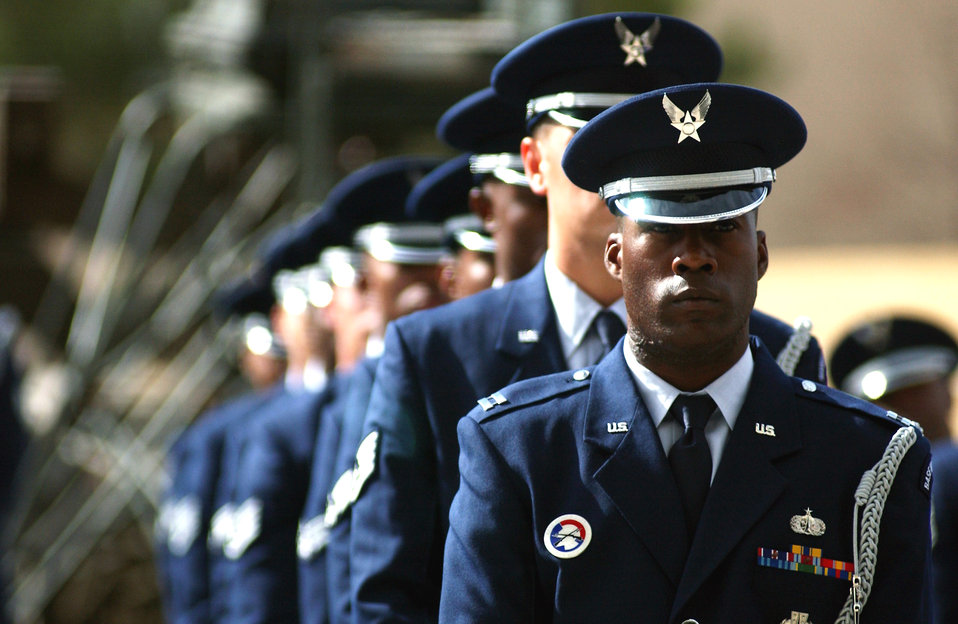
An honorable competition

PETERSON AIR FORCE BASE, Colo. -- The Patrick Air Force Base Honor Guard waits for the open ranks inspection portion of the 2004 Air Force Space Command honor guard competition here March 23.